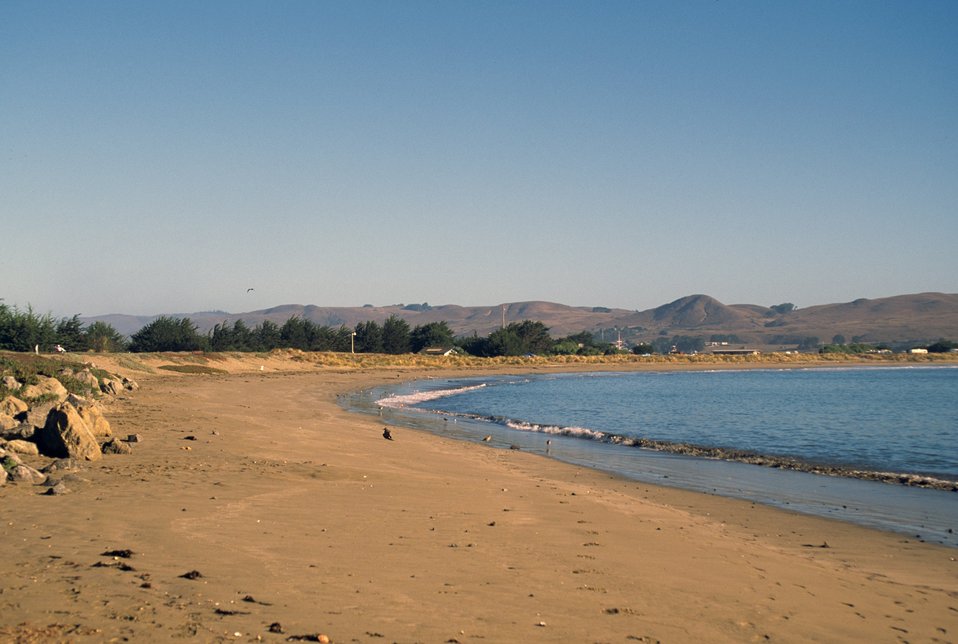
Doran Beach